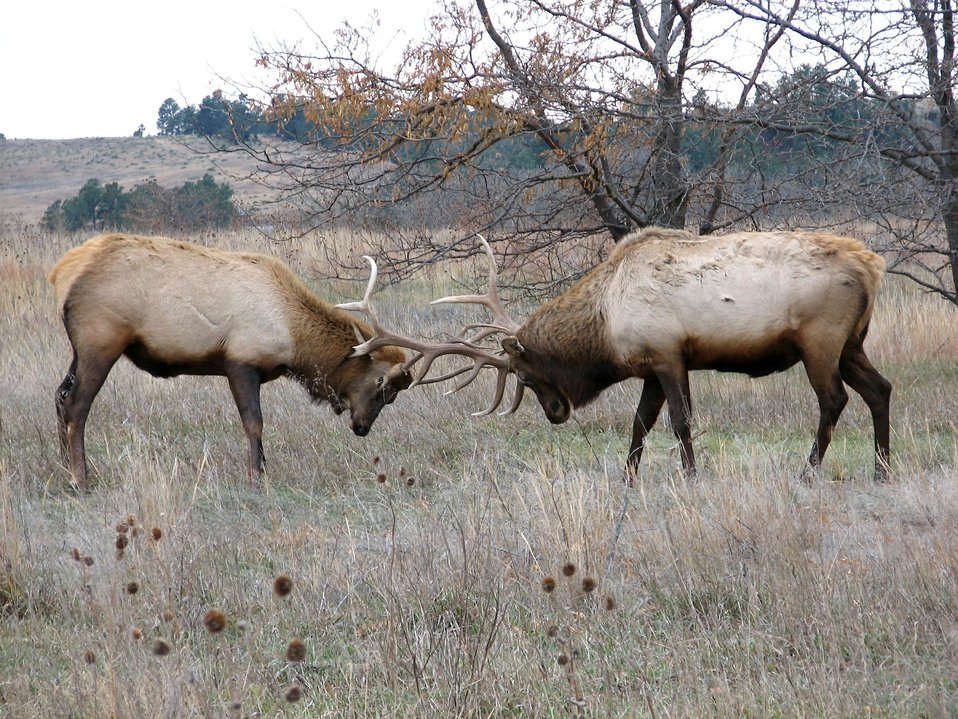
Fort Niobrara Refuge

Bull elk spar in the Fort Niobrara National Wildlife Refuge wilderness.